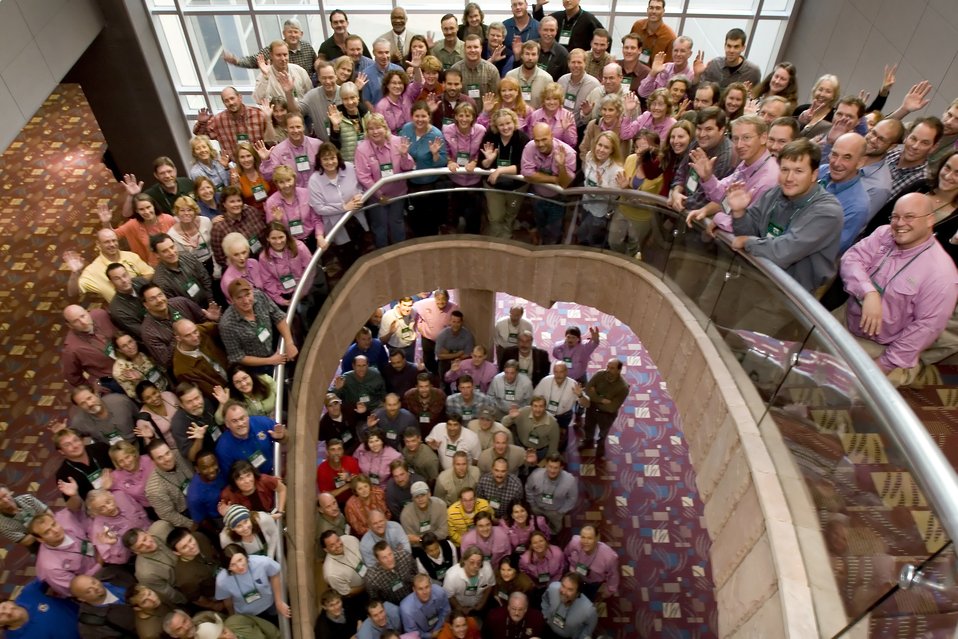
Partners for Fish & Wildlife Program Staff

Oklahoma City, Oklahoma. 2006.